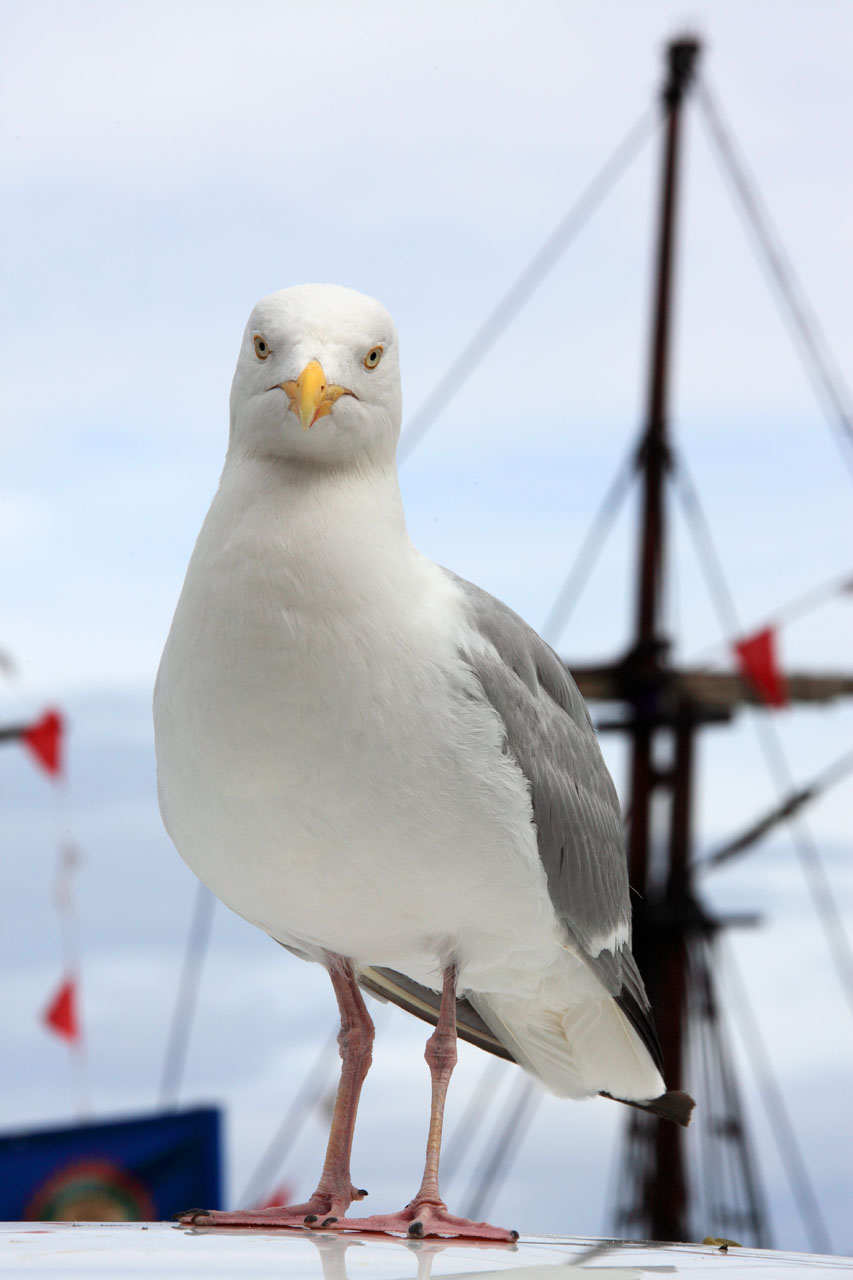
Seagull and boat

Seagull looking directly at me with an old boat in the background.